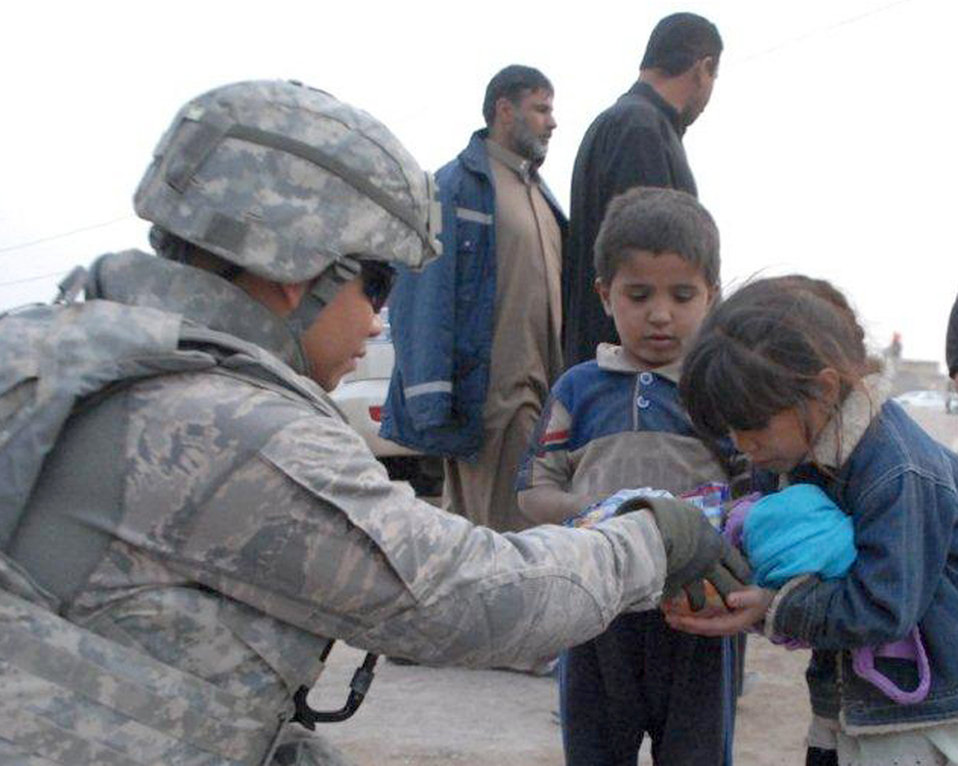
Service members give gifts to children

Master Sgt. Luis Buot gives candy to two Iraqi children Dec. 16, 2010, at Ur Elementary School near Tallil Air Base, Iraq. Sergeant Buot is an Echelon Above Division-Advise and Train maintenance adviser.